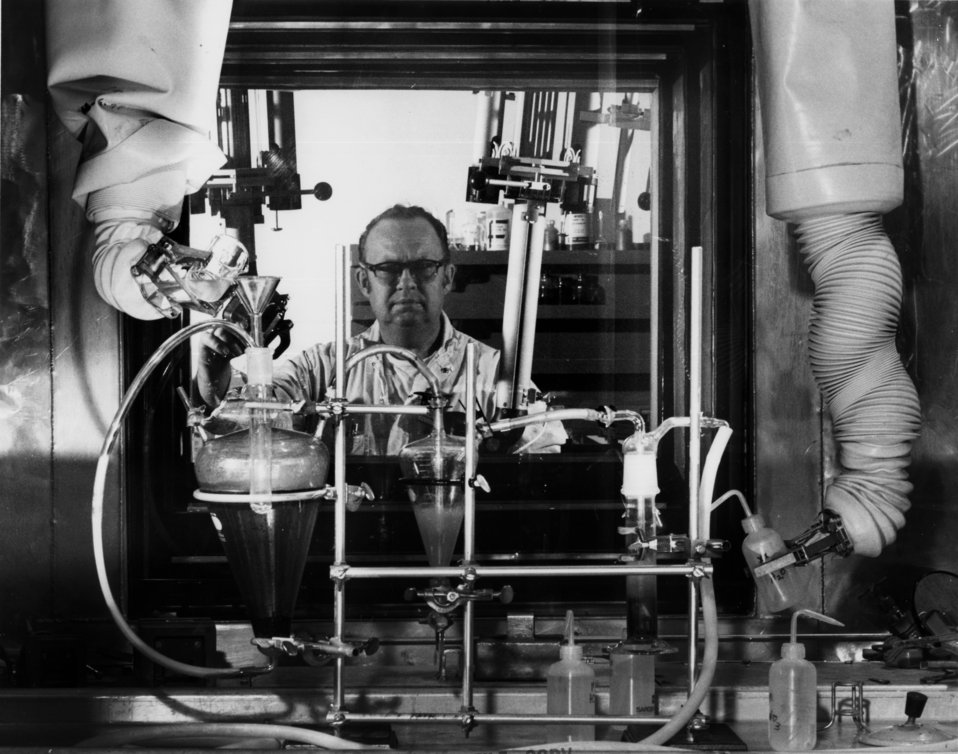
Operator With Mechinical Arms in Hot Cell ORNL

78-183 DOE photo Frank Hoffman 3-15-1978 Oak Ridge Tennessee